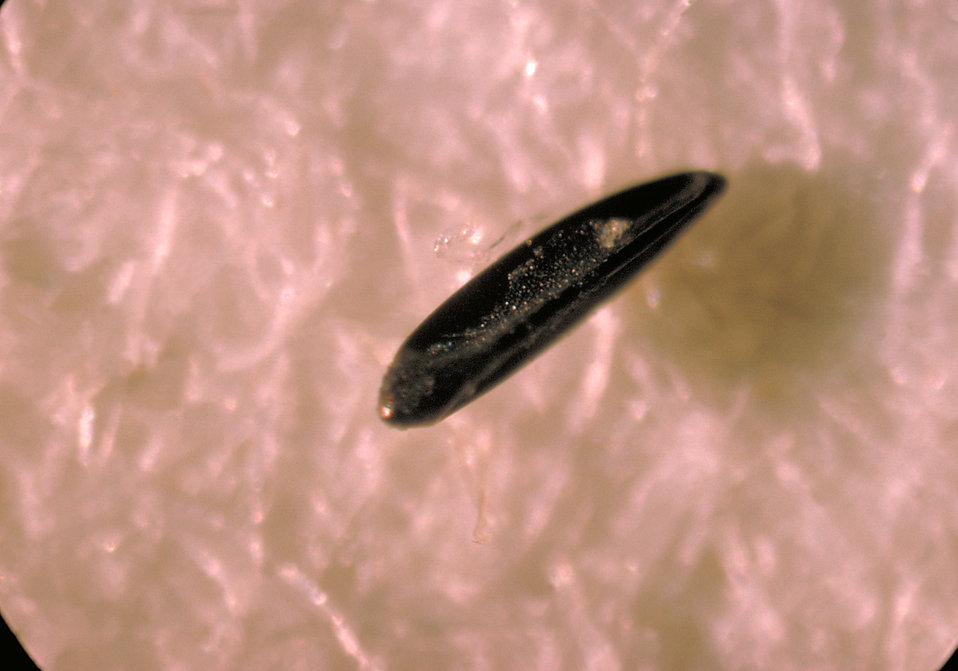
This is an individual egg of an Aedes aegypti mosquito.